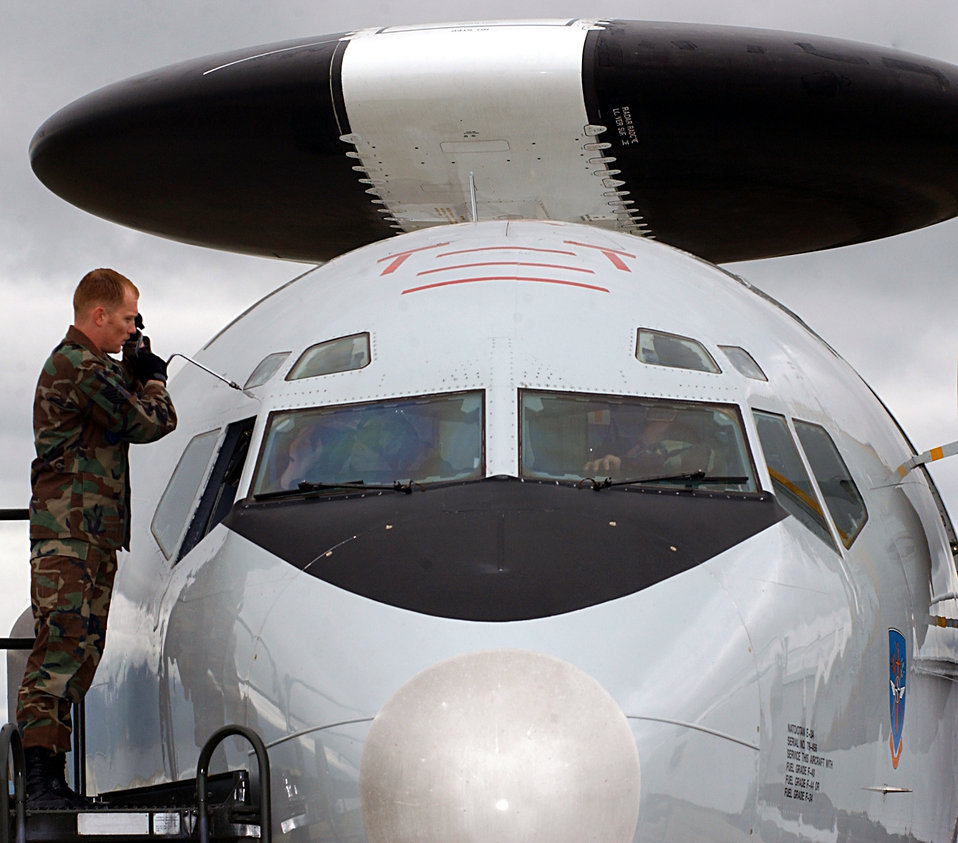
Windshield repair

ELMENDORF AIR FORCE BASE, Alaska -- Staff Sgt. Shane Oesterie helps replace a windshield on a NATO E-3A airborne warning and control system aircraft. The E-3A is here for Cooperative Cope Thunder, a Pacific Air Forces-sponsored air-combat training exercise which ends June 20. Oesterie is assigned to NATO's Geilenkirchen Air Base, Germany.